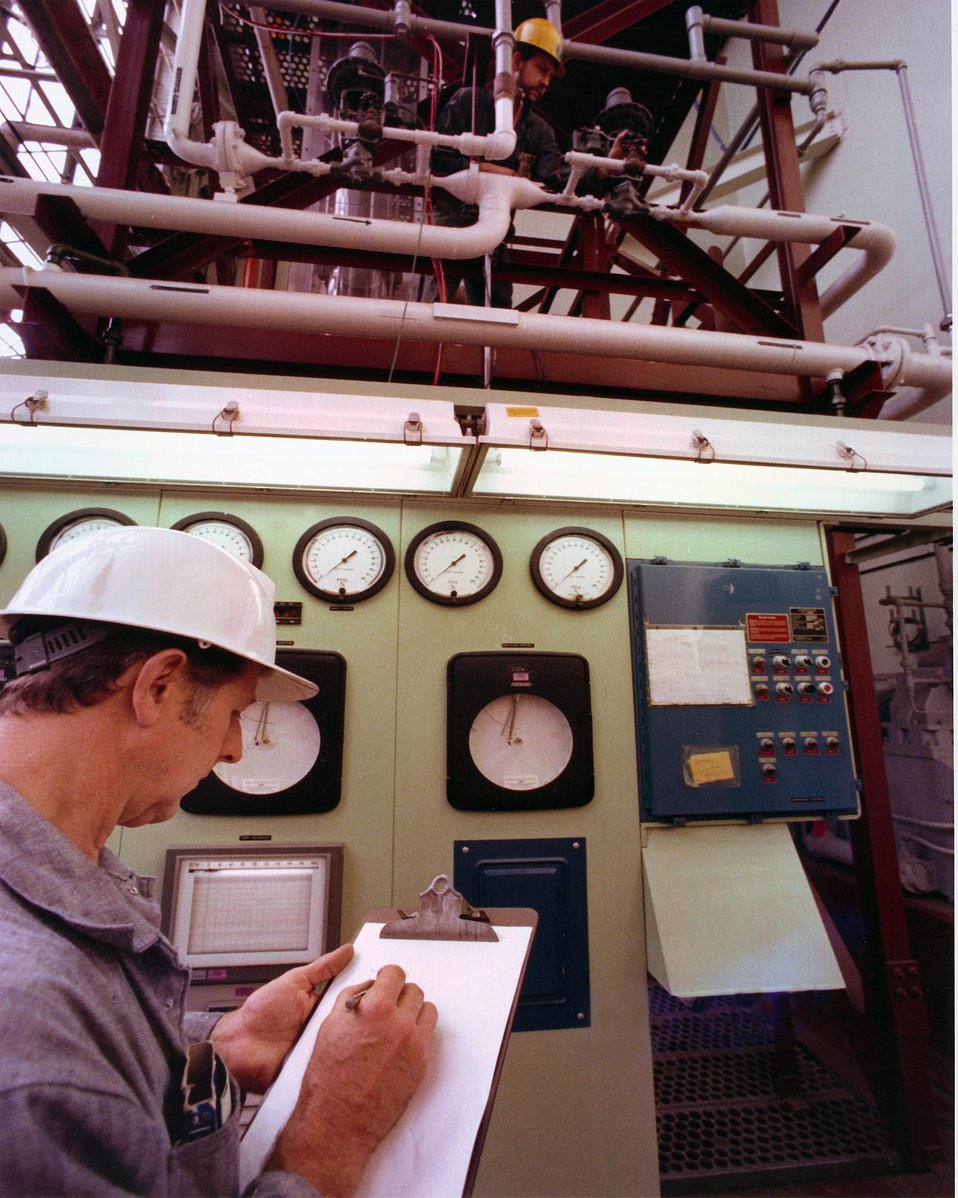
WORKER MONITORS THE COLD FLOW MODEL USED FOR TESTING THE HYDROGASIFICATION CONCEPT.

THE DILUTE-PHASE, FREE-FALL HYDRO GASIFICATION PROCESS IS A PROMISING THIRD-GENERATION COAL GASIFICATION PROCESS CUR- RENTLY BEING DEVELOPED AT NETL. IN THE DILUTE-PHASE, FREE- FALL HYDRO GASIFICATION PROCESS, CRUSHED RAW COAL AND HYDRO- GEN ARE FED INTO THE UPPER SECTION OF A SINGLE-STAGE HYDRO- GENATION REACTOR. FROM THE TOP OF THE REACTOR, THE COAL FALLS FREELY AS A DILUTE CLOUD THROUGH THE HYDROGEN. ABOUT 40 PERCENT OF THE CARBON IN THE RAW COAL IS CONVERTED DIRECTLY TO METHANE BY REACTION WITH HYDROGEN. ONE OF ITS UNIQUE FEATURES IS THAT IT PERMITS COAL TO BE FED DIRECTLY TO THE GASIFIER, CIRCUMVENTING THE PROBLEMS OF CAKING AND AGGLOMERATION, AND THEREBY ELIMINATING THE EXPENSIVE PRE- TREATMENT STEPS. IN ADDITION, A HYDROGEN-RICH PORTION OF THE COAL SOMETIMES LOST IN PRETREATMENT IS RETAINED, AND ALMOST ALL OF THE METHANE IN THE PRODUCT GAS IS PRODUCED IN THE SINGLE-STAGE GASIFIER BY DIRECT REACTION OF COAL WITH HYDROGEN.